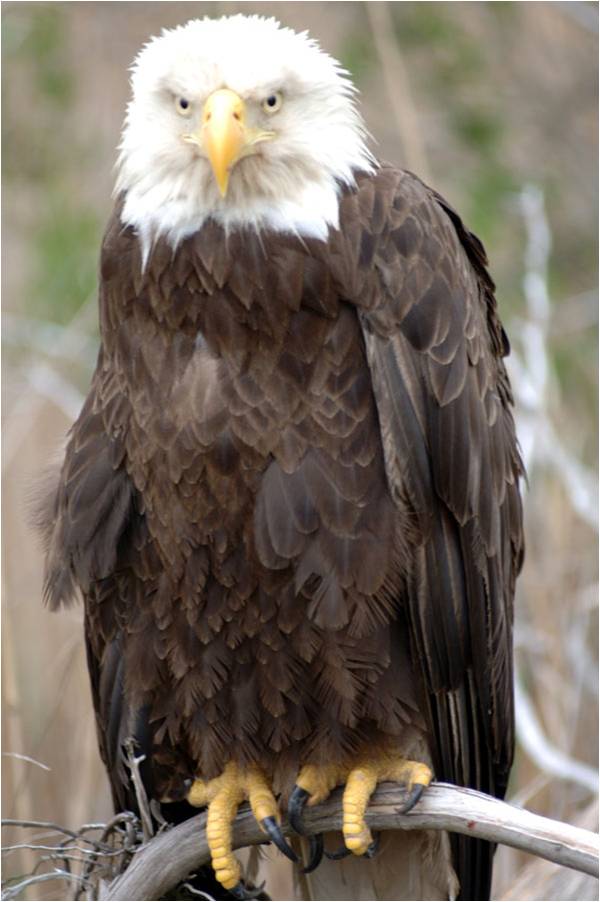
Bald Eagle